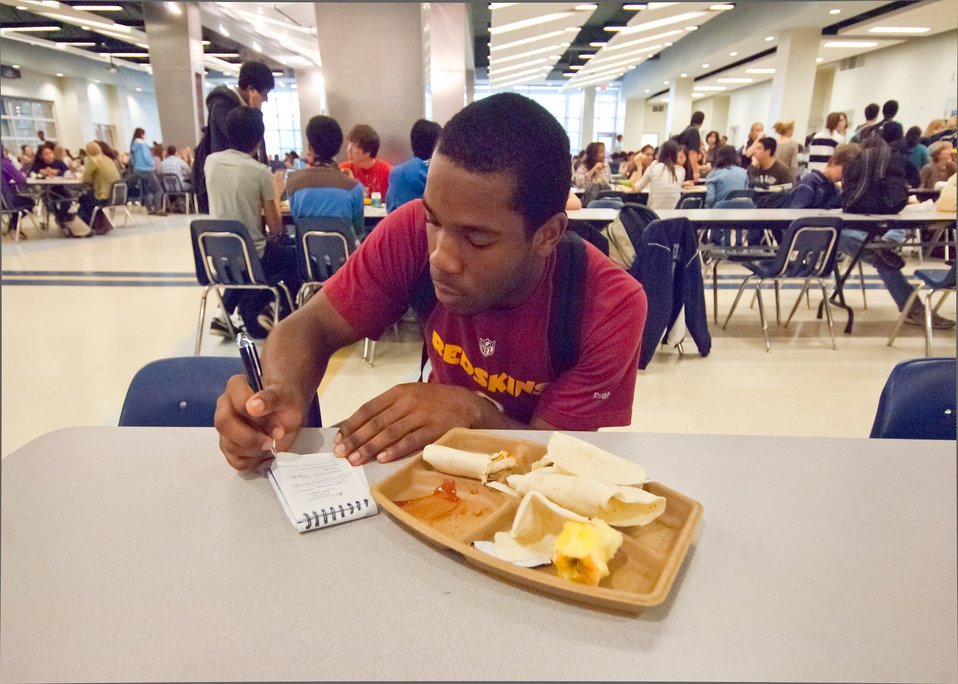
Jakuan Crews a Washington-Lee High School student in Arlington, Virginia enjoys Baja Fish Taco Wrap during lunch Wednesday, October 19, 2011. The National School Lunch Program is a federally assisted meal program administered by the United States Department of Agriculture, Food and Nutrition Service operating in public, nonprofit private schools and residential child care institutions. It provides nutritionally balanced, low-cost or free lunches to children each school day.